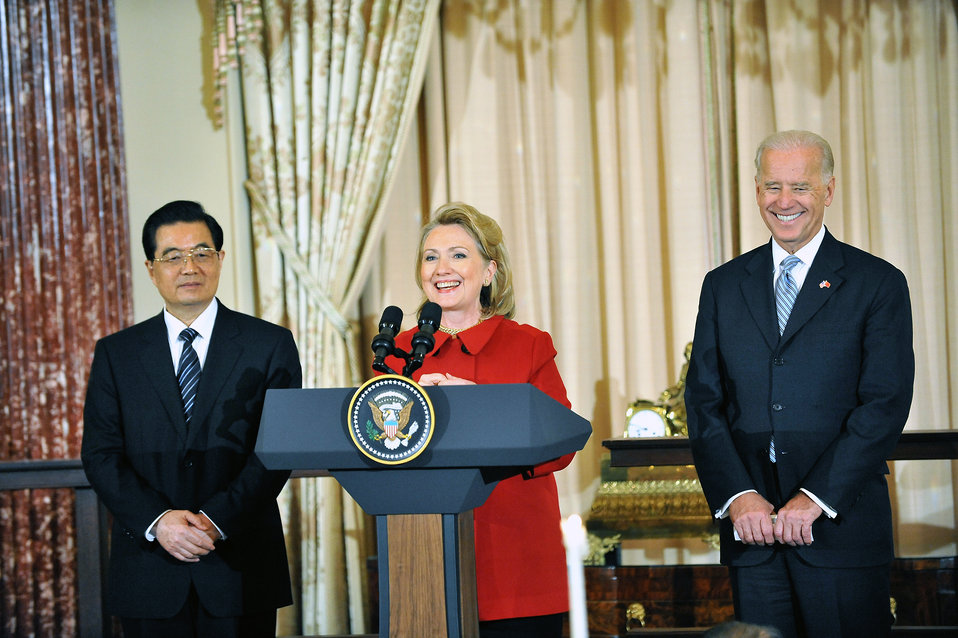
Secretary Clinton, VIce President Biden and Dr. Biden Co-Host a Luncheon in Honor of Chinese President Hu Jintao

U.S. Secretary of State Hillary Rodham Clinton, U.S. Vice President Joseph Biden and Dr. Jill Biden co-host a State Luncheon in honor of Chinese President Hu Jintao at the U.S. Department of State in Washington, D.C., on January 19, 2011.